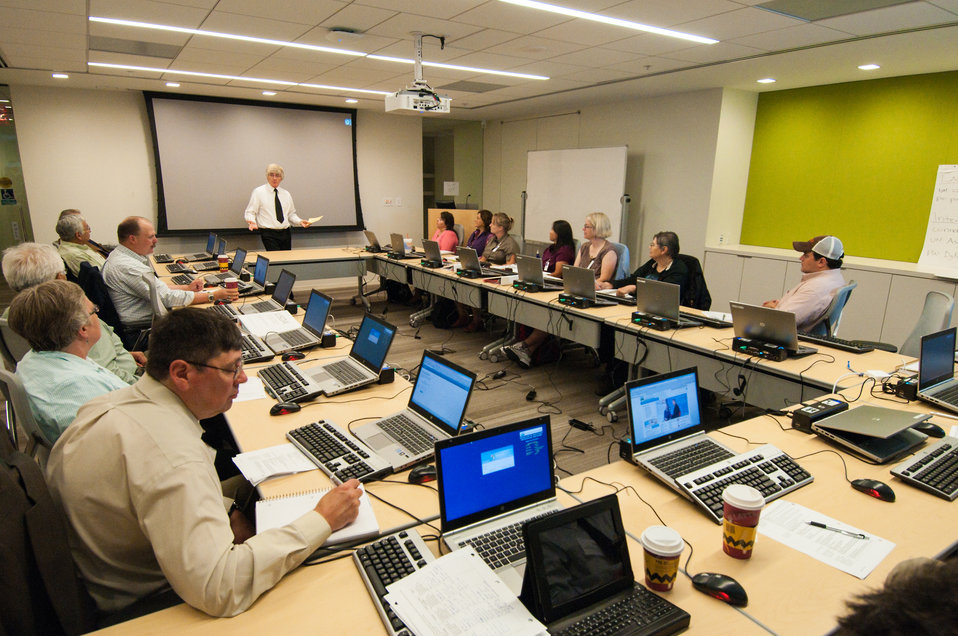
U.S. Department of Agriculture (USDA) National Institute of Food and Agriculture (NIFA) Strategic Tribal College Competitive Grant Programs Program Leader Tim Grosser focuses on the over 100 competitive grant programs available to Tribal Colleges and University’s and the work performed with NIFA Endowment Grants at the USDA 2013 Land-Grant Development Tribal Fellows Program held in Washington, D.C. on Monday, Jun.03, 2013.